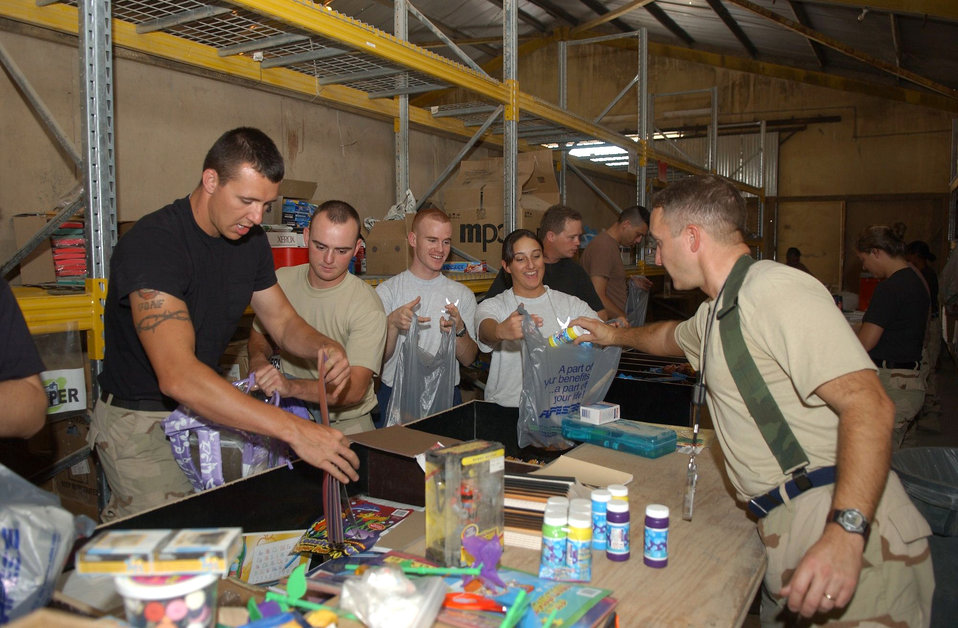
Operation School Supplies

Airmen at Kirkuk Air Base, Iraq, assemble school supply packets with pencils, markers, paper, toys and more. More than 65 volunteers assembled about 9,000 school supply packets for delivery to local schools.